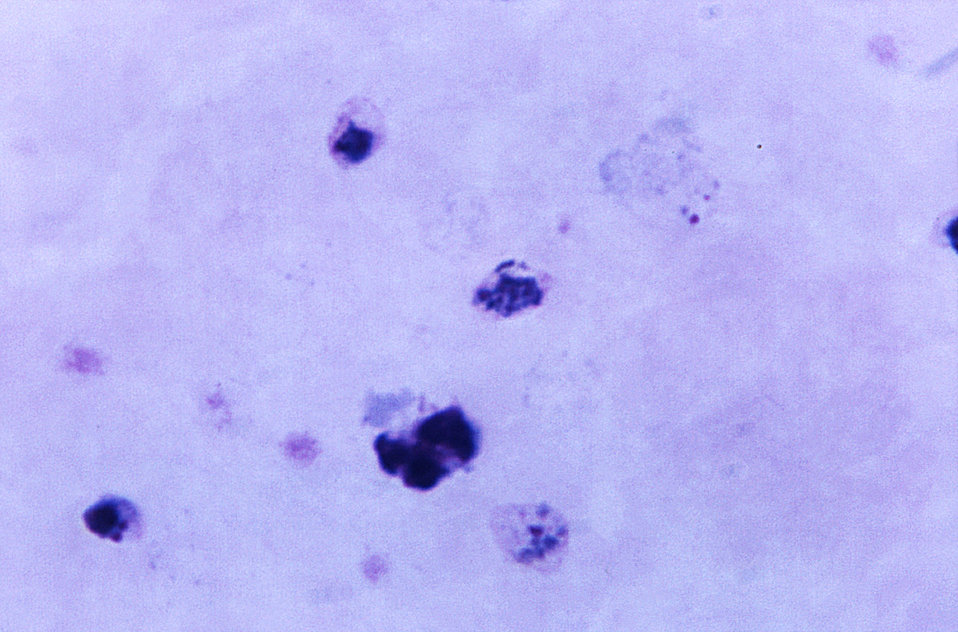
Magnified 1125X, this thick film photomicrograph revealed the presence of an immature Plasmodium vivax schizont containing a number of chromatin masses.